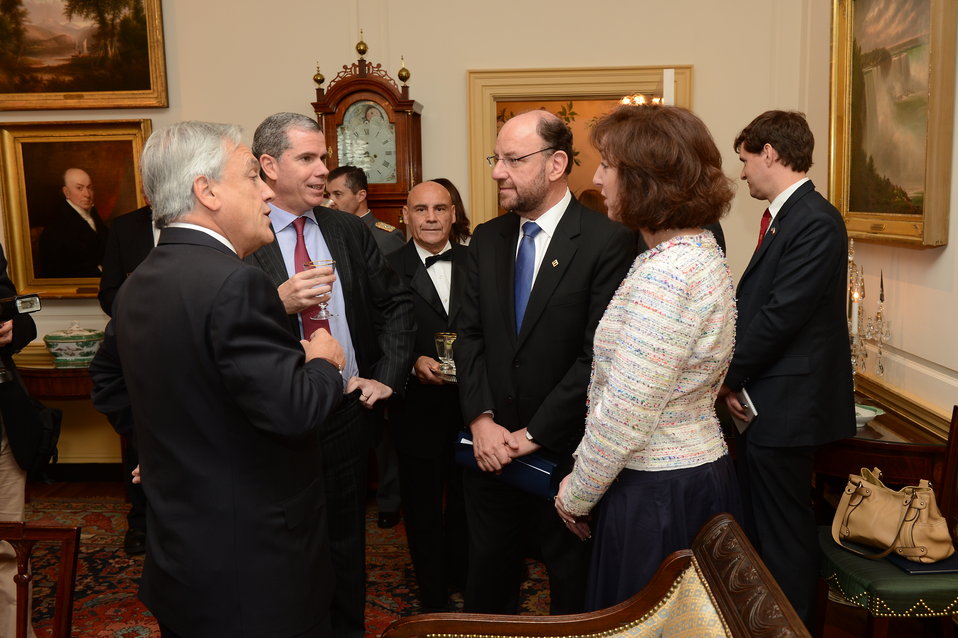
Assistant Secretary Jacobson Speaks With Chilean President Pinera, Ambassador Bulnes, and Foreign Minister Moreno

U.S. Assistant Secretary of State for Western Hemisphere Affairs Roberta Jacobson speaks with Chilean President Sebastian Pinera, Ambassador Felipe Bulnes, and Foreign Minister Alfredo Moreno at the U.S. Department of State in Washington, D.C., on June 3, 2013.